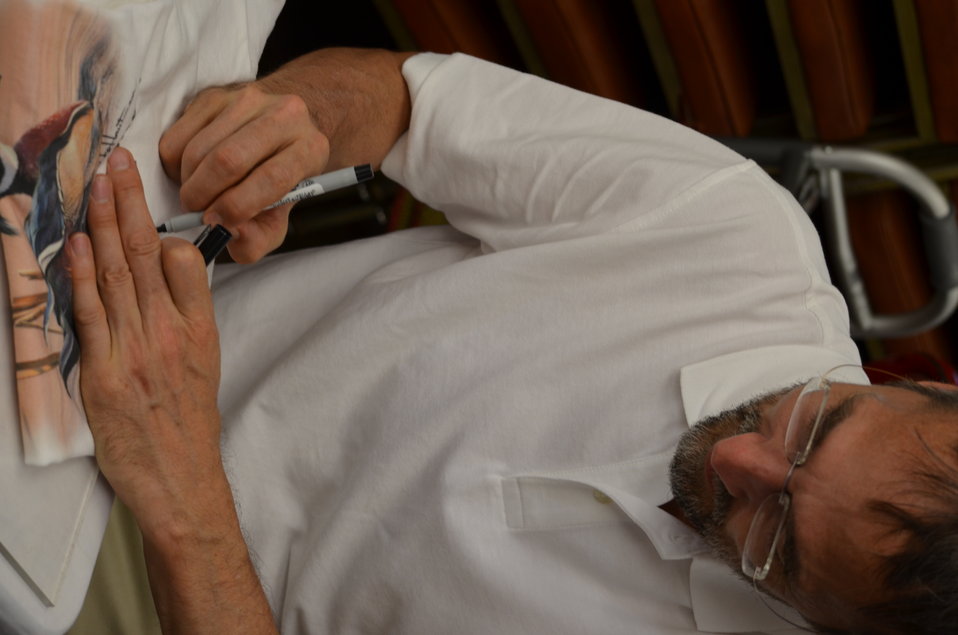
Hautman signs autographs following the ceremony.